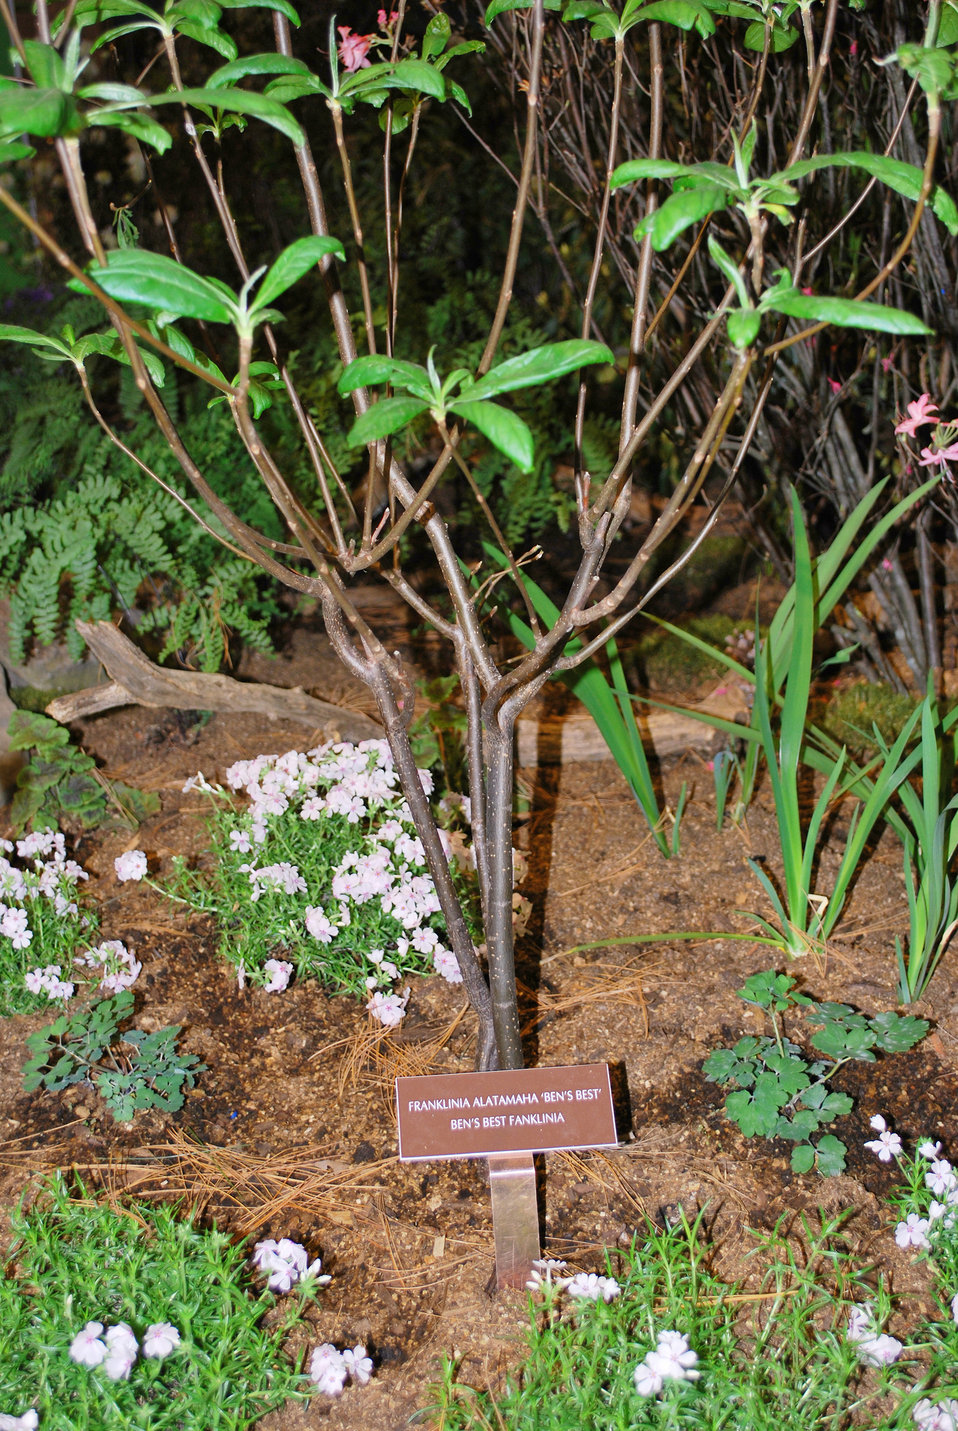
March 4, 2013 - Mid-Atlantic Region, Native Plant: Franklinia

Named for Philadelphia's Benjamin Franklin, the Franklinia is a native plant that is now rare in the wild.

This plant was part of the EPA exhibit at the 2013 Philadelphia Flower Show which gave visitors ideas as to how they might use native plants in their own landscaping.

More EPA resources, species photos, and information about the 2013 Flower Show

Find the right plants for you and your garden